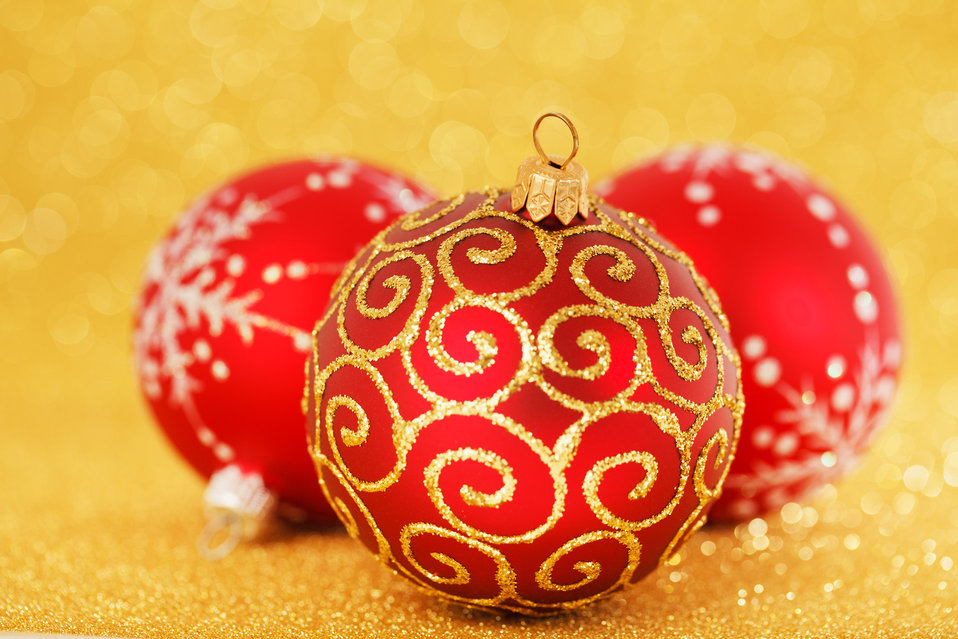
Red christmas decoration

Three red christmas balls on a golden background.